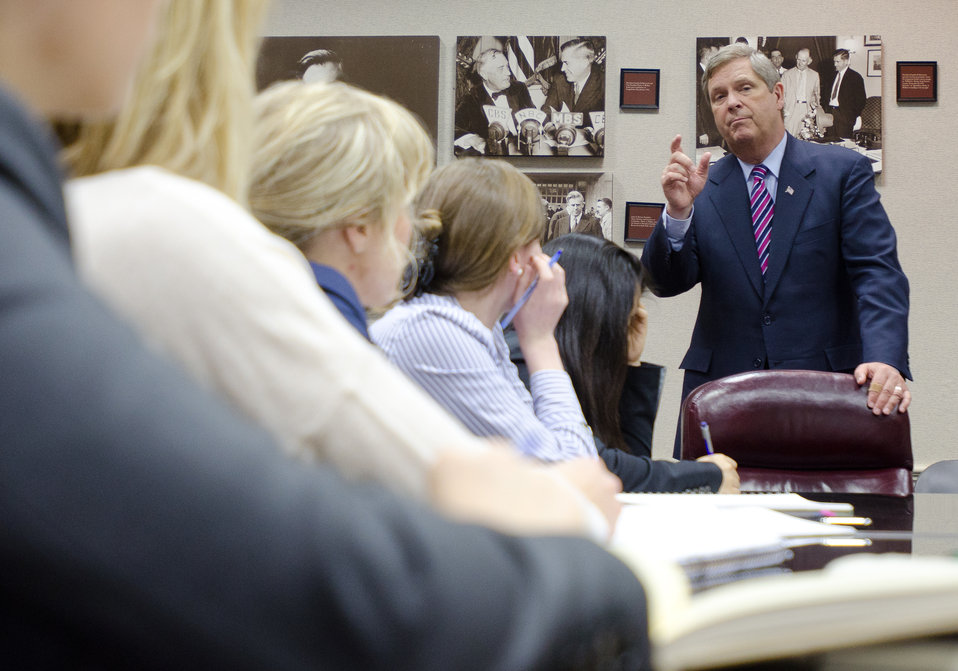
U.S. Department of Agriculture (USDA) Secretary Tom Vilsack speaks with American University students about the impact of a leaner budget and several other topics facing the USDA. The event took place on Wednesday March 23, 2011 in Washington, DC.. The students were here to learn about Foreign Agriculture Service and the international role of the USDA.